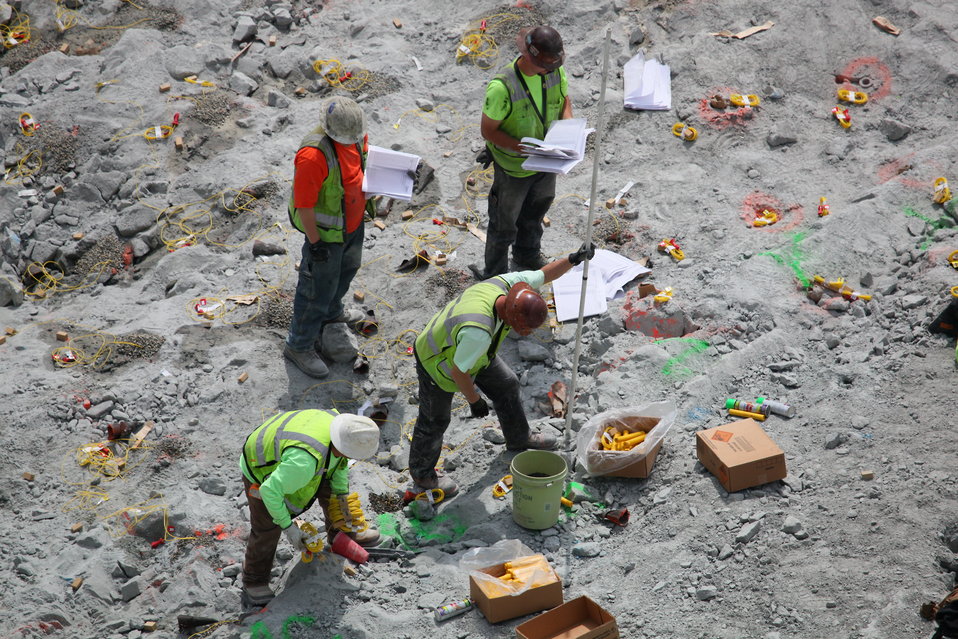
Corps completes final rock blasting for Folsom Dam spillway

Blasting crews place explosive charges in the Folsom Dam auxiliary spillway foundation in Folsom, Calif., April 9 in preparation for one of the final rock blasts. The U.S. Army Corps of Engineers Sacramento District completed its final rock blasting for the foundation of spillway’s control structure April 13, concluding daily road closures on Folsom Lake Crossing bridge. More than 3.5 million cubic yards of rock and soil were removed from the auxiliary spillway site. With blasting complete, the Sacramento District will now shift its focus to construction of the spillway's control structure, essentially a second dam. The spillway is scheduled to be ready for use in 2017 and will allow Folsom Dam to release water sooner and more safely, helping reduce flood risk for the Sacramento region.